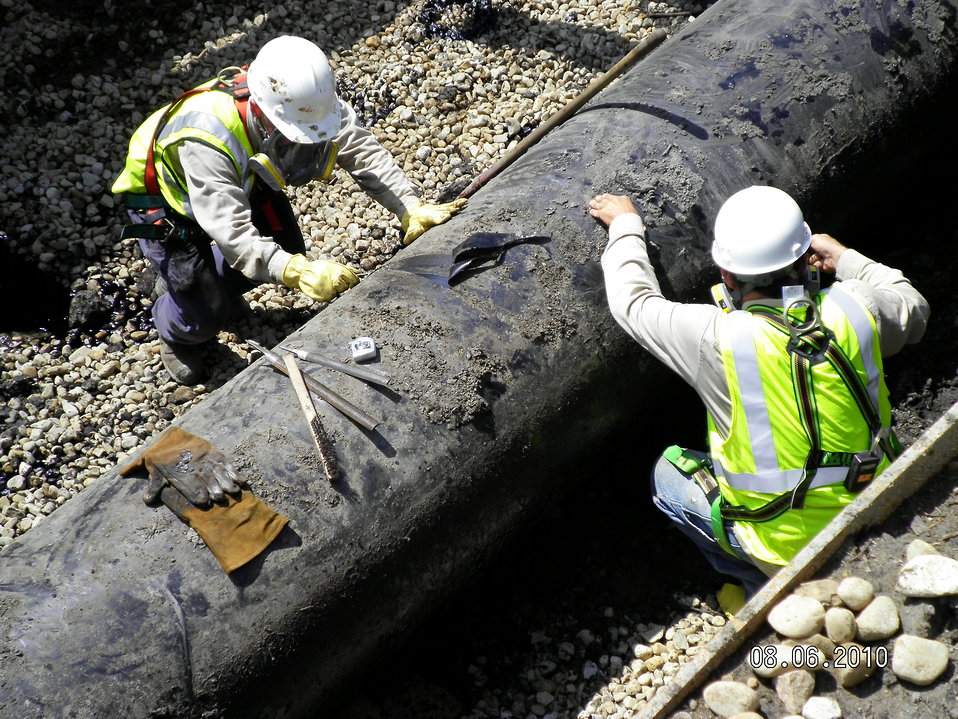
Worker tight - Enbridge Oil Spill pipeline removal 2

Technicians in personal protective equipment prepare pipe before cutting and removing the section from the Enbridge pipeline oil spill site near Marshall, Michigan.